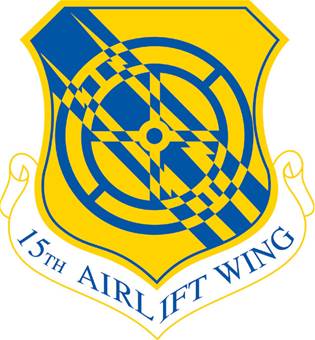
15 Airlift Wing shield

The 15 Airlift Wing shield was originally approved for the 15th Fighter Group on Oct. 2, 1942. .